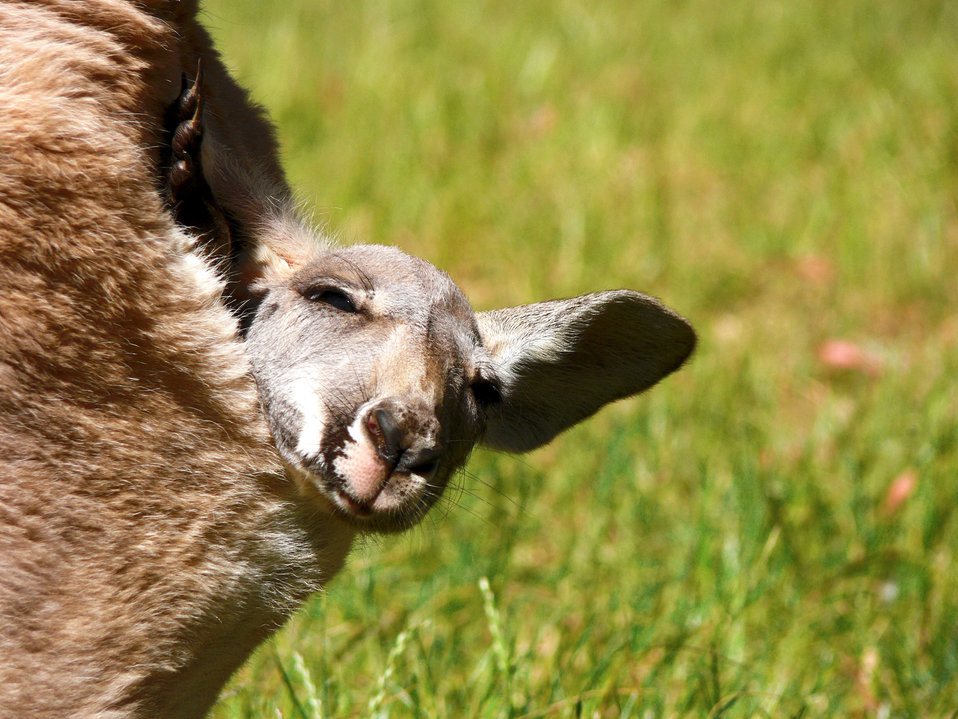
Joey in mother's pouch

Grey kangaroo joey with head sticking out of mother's pouch.